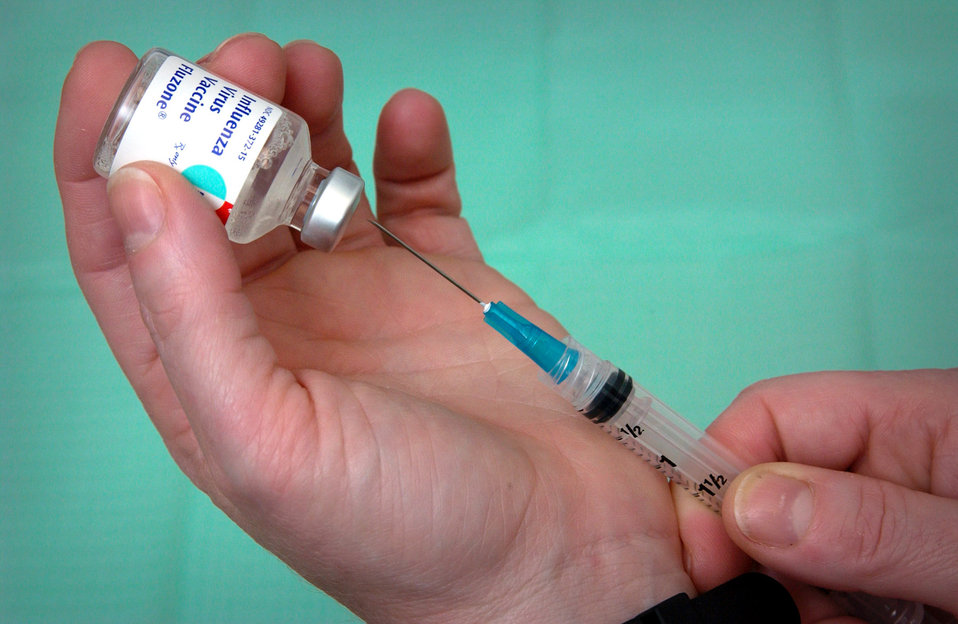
This is CDC Clinic Chief Nurse Lee Ann Jean-Louis extracting Influenza Virus Vaccine, Fluzone� from a 5 ml. vial.